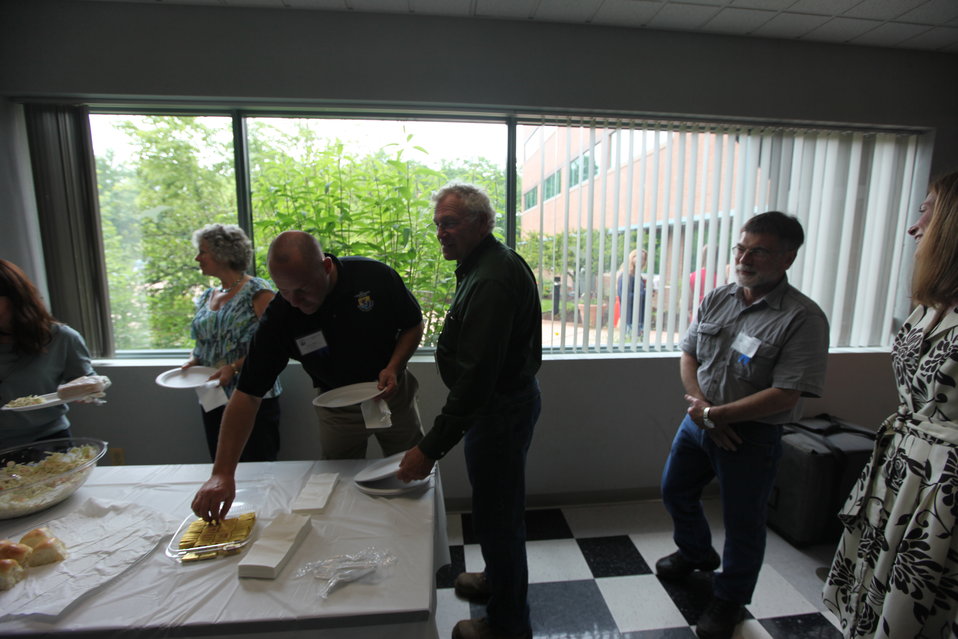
Northeast Region Employee Appreciation Awards

Luncheon